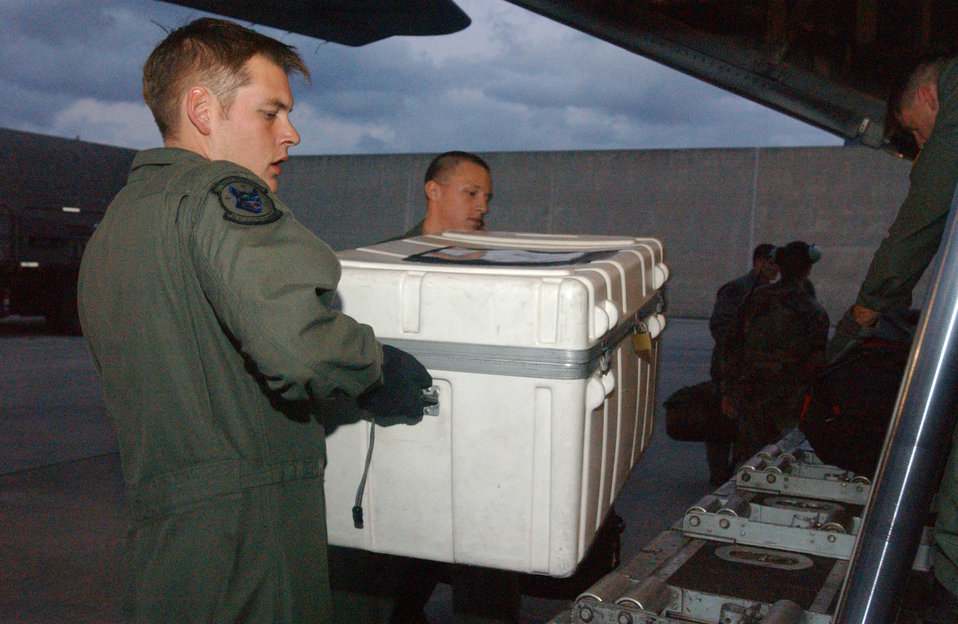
Loading relief supplies

KADENA AIR BASE, Japan -- Airmen here help load relief supplies on an aircraft bound for Southeast Asia as part of disaster relief following a 9.0-magnitude earthquake that struck Dec. 26 off the coast of Indonesia. The quake caused tsunami waves that have affected 12 countries and have killed more than 100,000 people. More than 3,000 cases of packaged meals and four aircraft pallets of fresh water were processed through the cargo area here Dec. 29. The 18th Wing is providing relief supplies and personnel to help with the humanitarian effort.